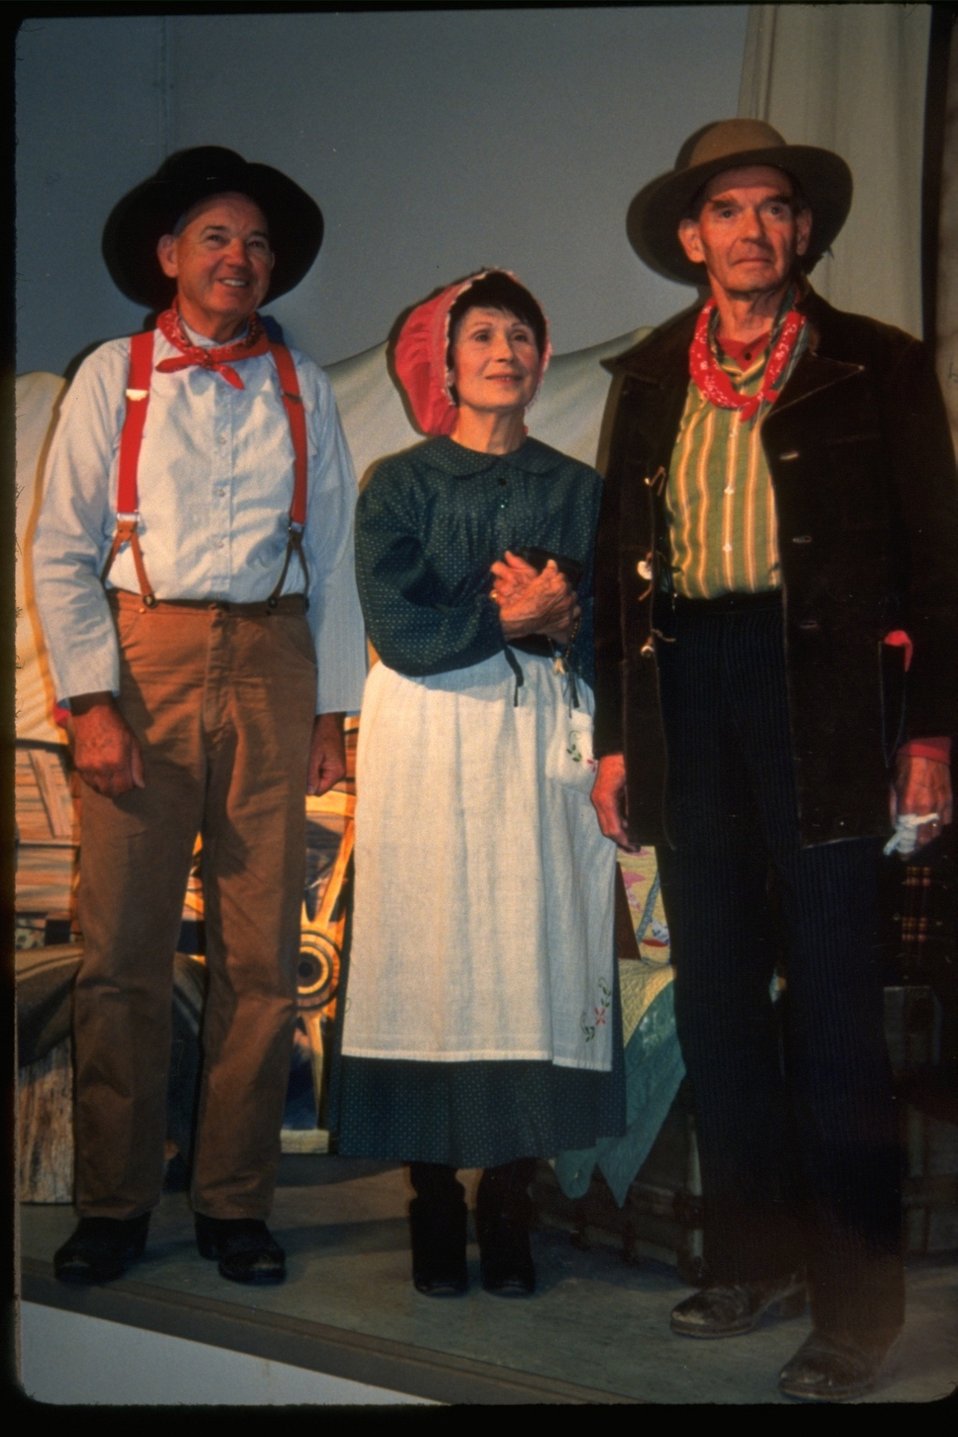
Theater performance --Browns & Mahush-- at the NHOTIC.